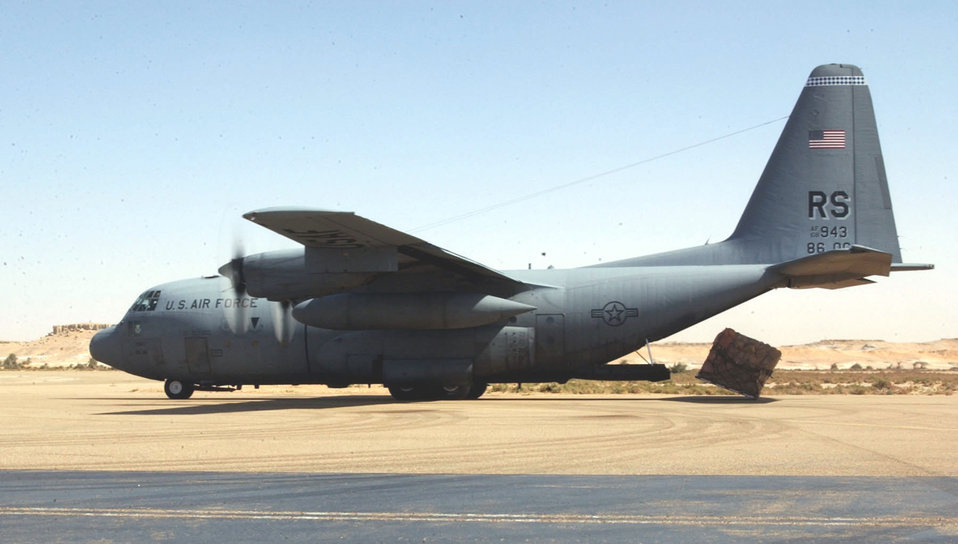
Military aid

FAYA-LARGEAU AIRPORT, Chad (AFPN) -- A pallet of food and blankets slips off the back of an 86th Airlift Wing C-130 Hercules here March 13 as the crew performs a